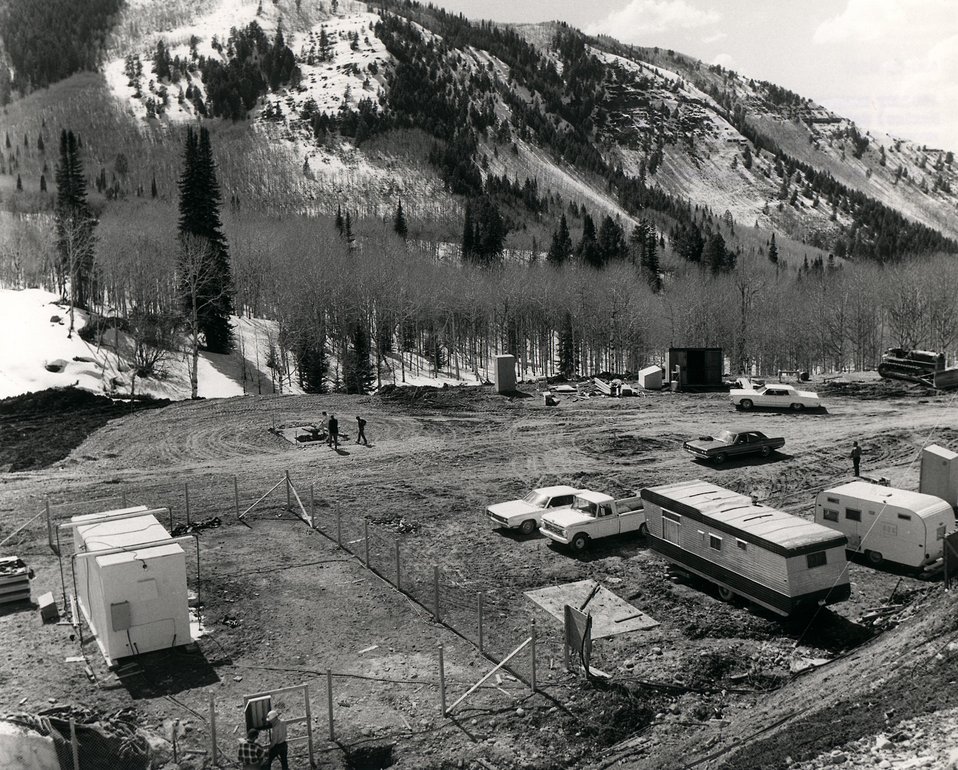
A group of Los Alamos (New Mexico) Scientific Laboratory personnel gather around ground zero site. Circa 1969.